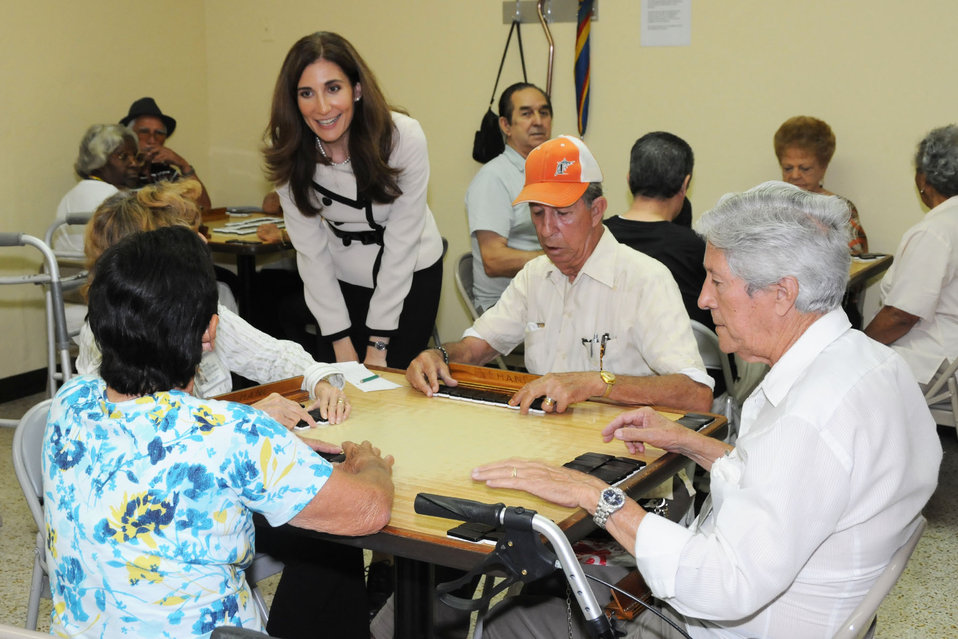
Deputy Administrator for SNAP Lisa Pino talks with senior citizens as they play Cuban dominos at the Little Havana Activities and Nutrition Center in Miami.